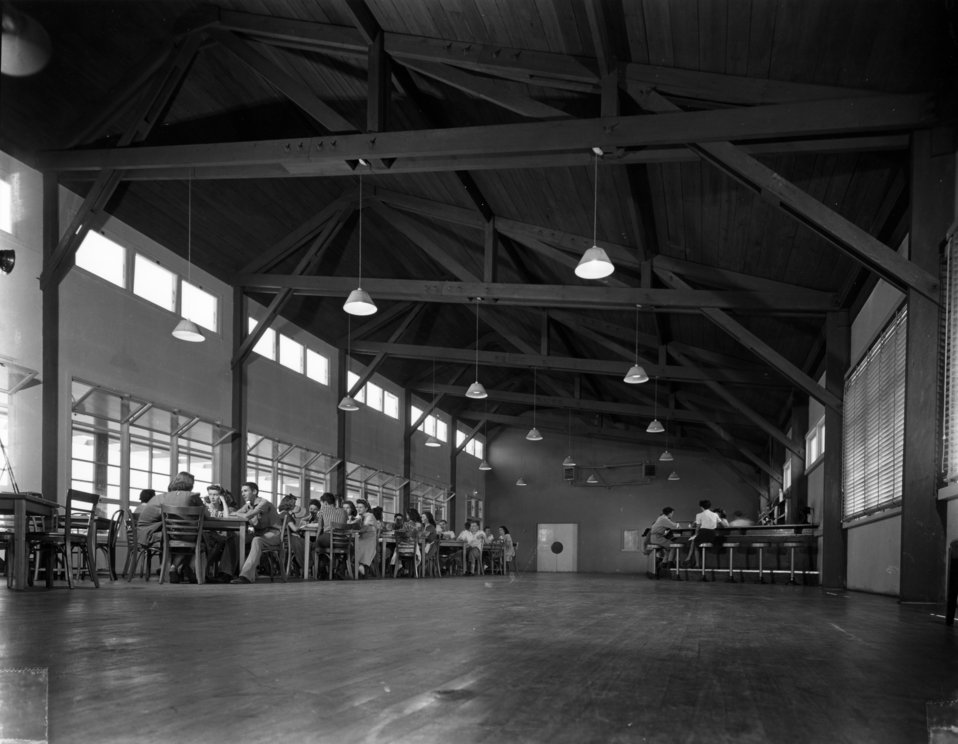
Services at Oak Ridge